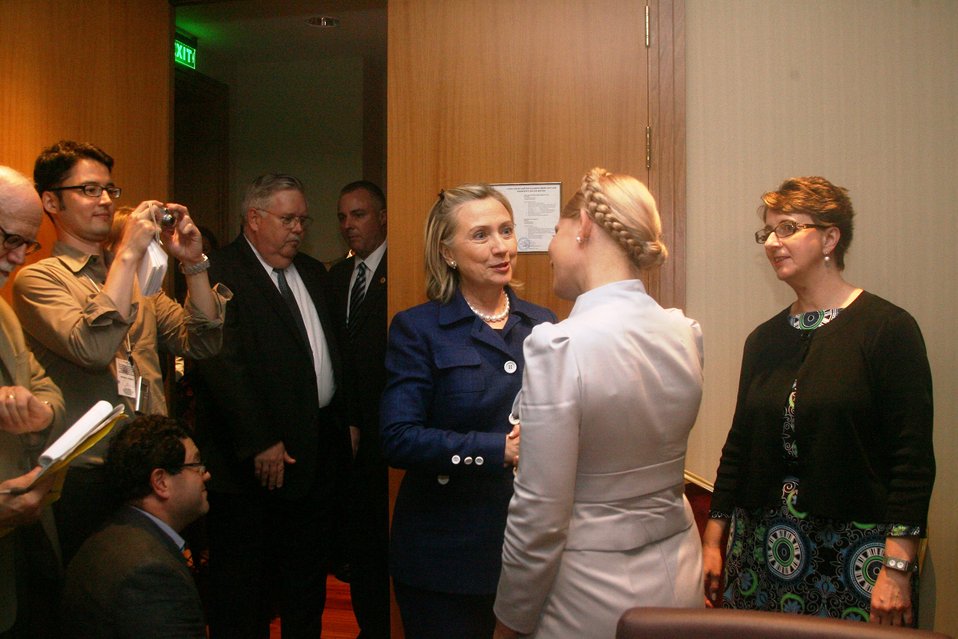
Secretary Clinton Meets With Former Ukrainian Prime Minister

U.S. Secretary of State Hillary Rodham Clinton is greeted by former Ukrainian Prime Minister and opposition leader Yuliya Tymoshenko in Kyiv, Ukraine, on July 2, 2010.